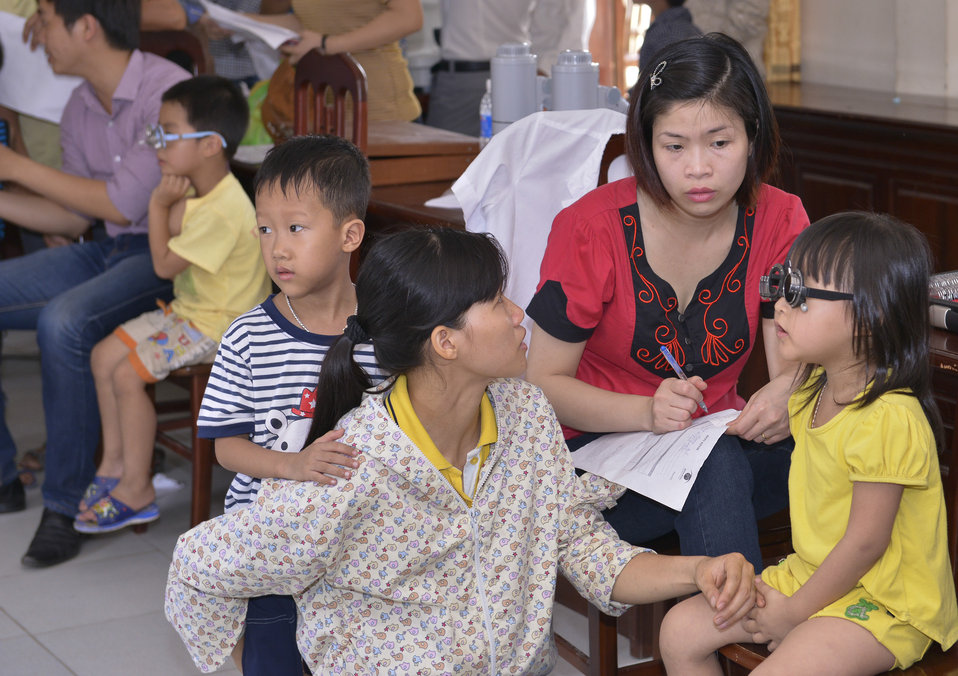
Eye screening for kindergarten children in Quoc Oai district of Hanoi

Quoc Oai, Hanoi. May 31, 2014.